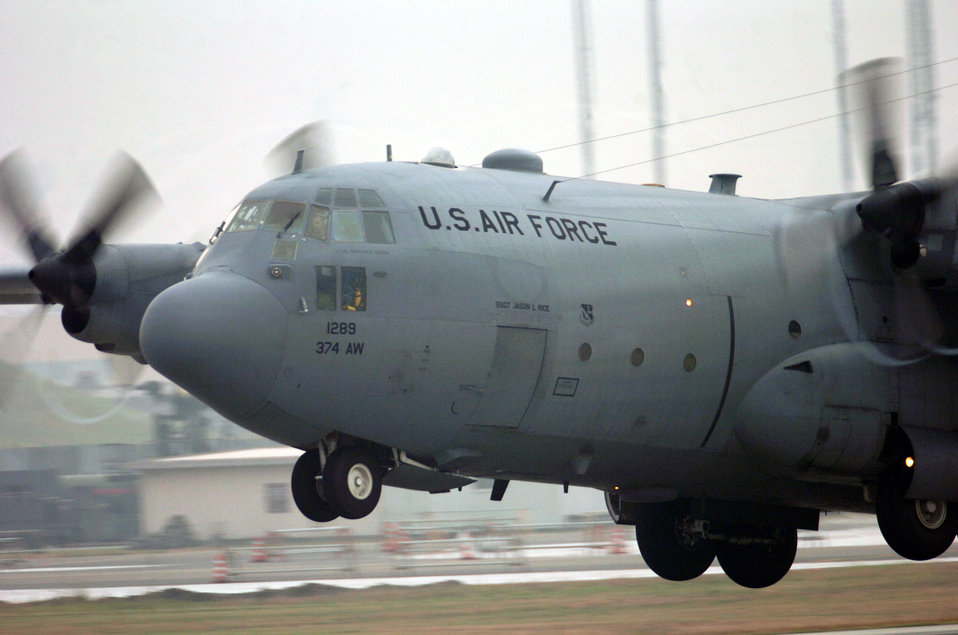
Airmen brandishing a 'Keen Sword'

YOKOTA AIR BASE, Japan -- A C-130 Hercules from the 36th Airlift Squadron here takes off Nov 11 for a cargo airdrop mission during exercise Keen Sword 2005. Some of the exercise events and objectives include dissimilar aircraft training, noncombatant evacuation operations, base security and force protection, search and rescue, and close-air support. The exercise is being conducted at U.S. and Japanese military bases throughout Japan.